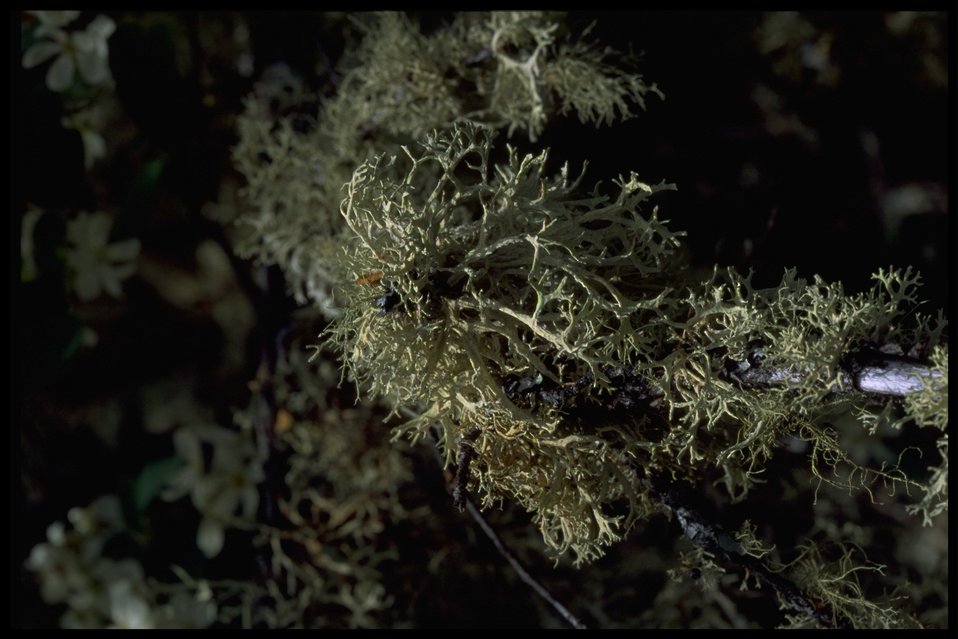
Medium shot of Lichen.